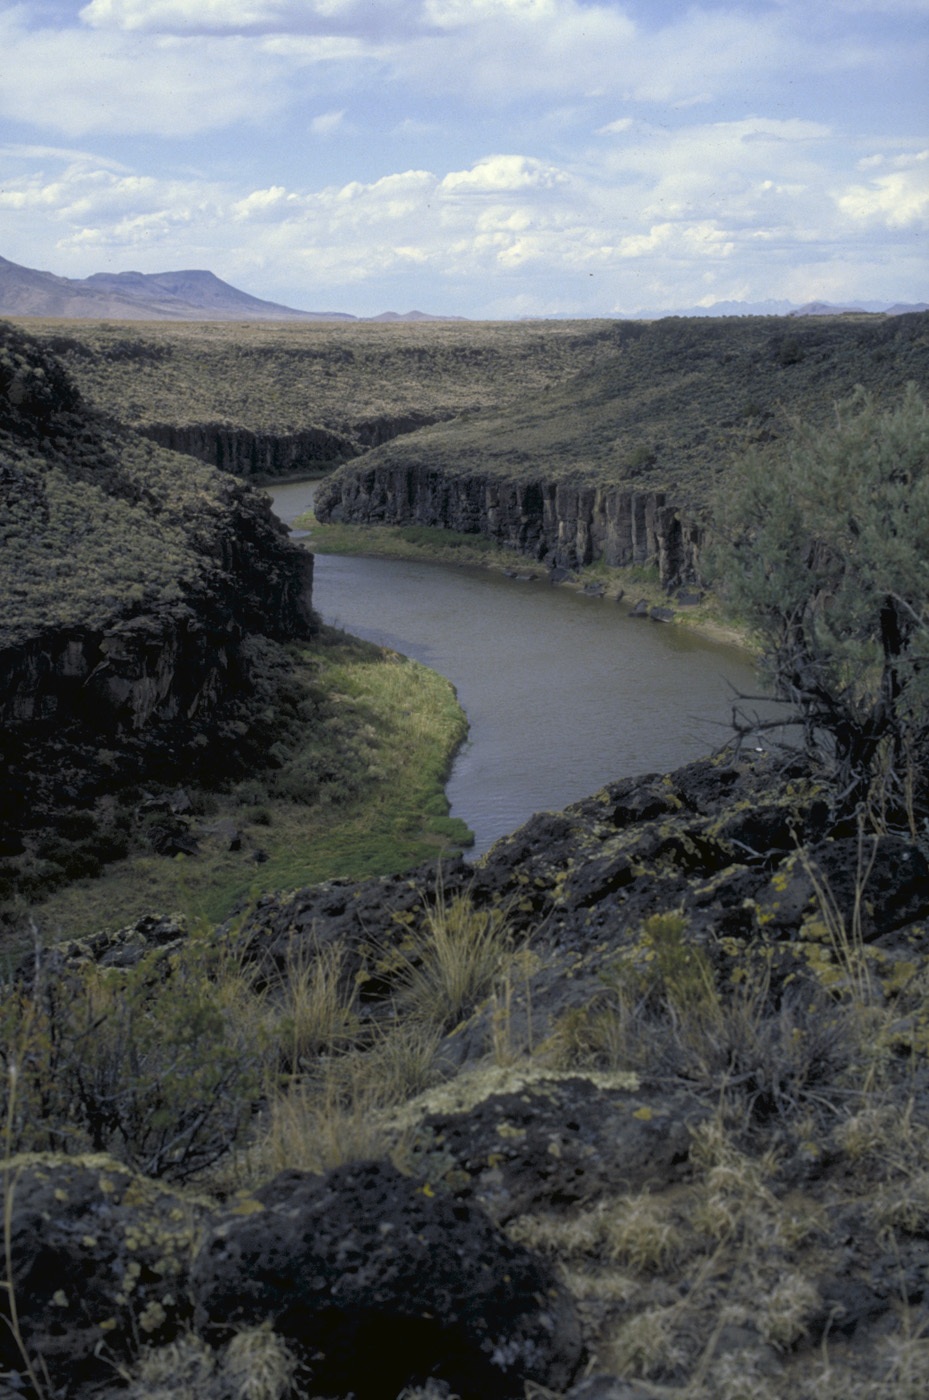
Scenic of the Rio Grande